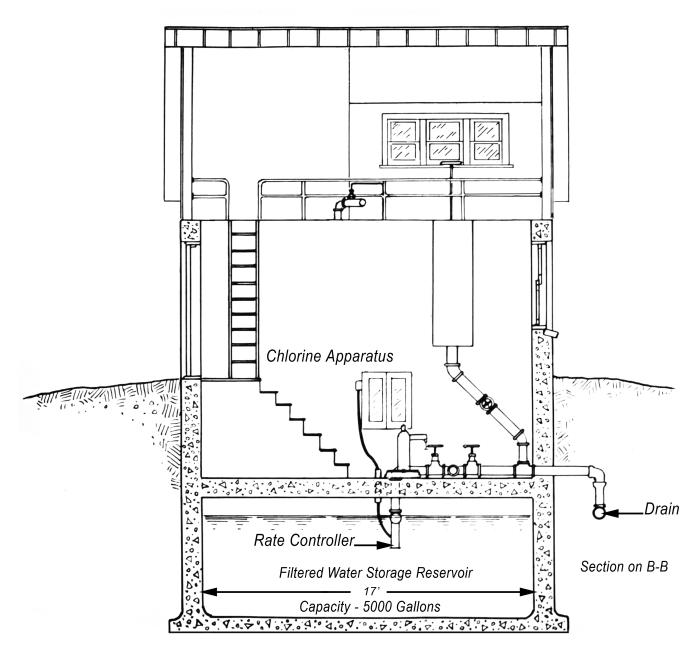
This historic 1922 diagram depicted a plan for a small municipal water filtration plant. In this particular section the relationship of the unit's chlorinator and the clear well was described. Other views of this filtration plant can be seen in PHIL 8645, 8646, 8647, 8649 images.